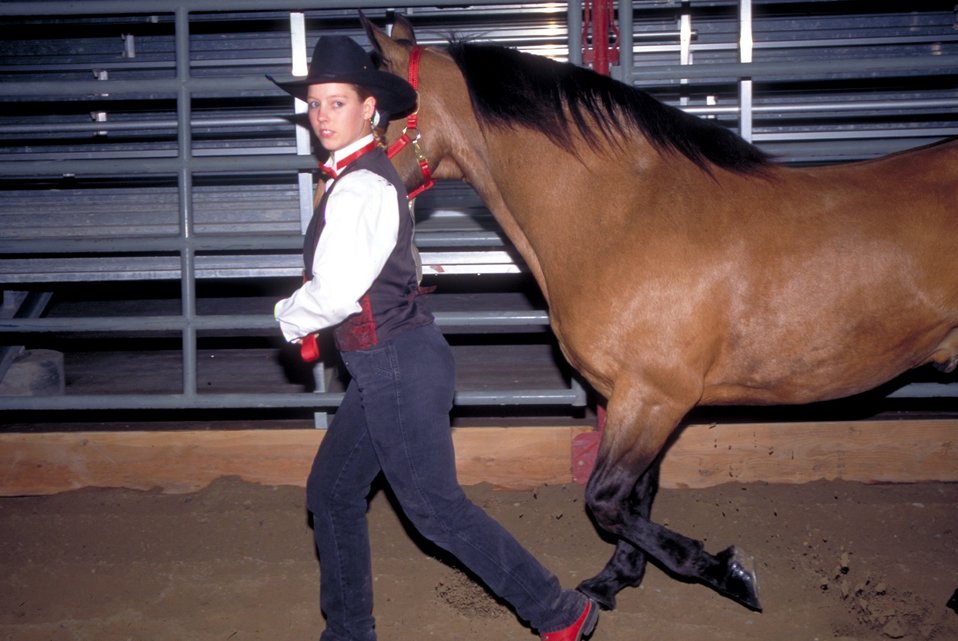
Utah Annual Wild Horse Festival.